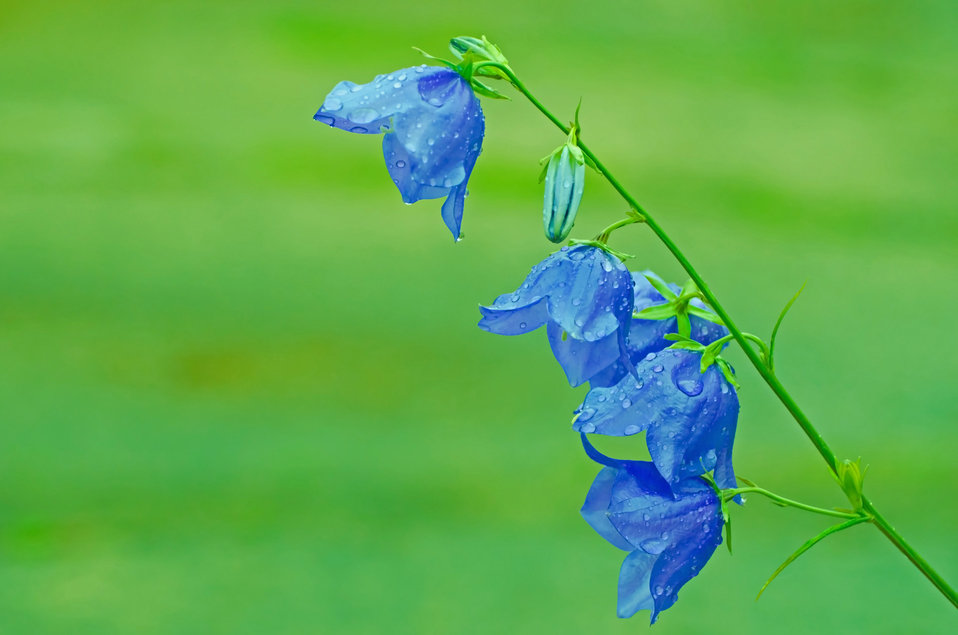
Flowers - background.